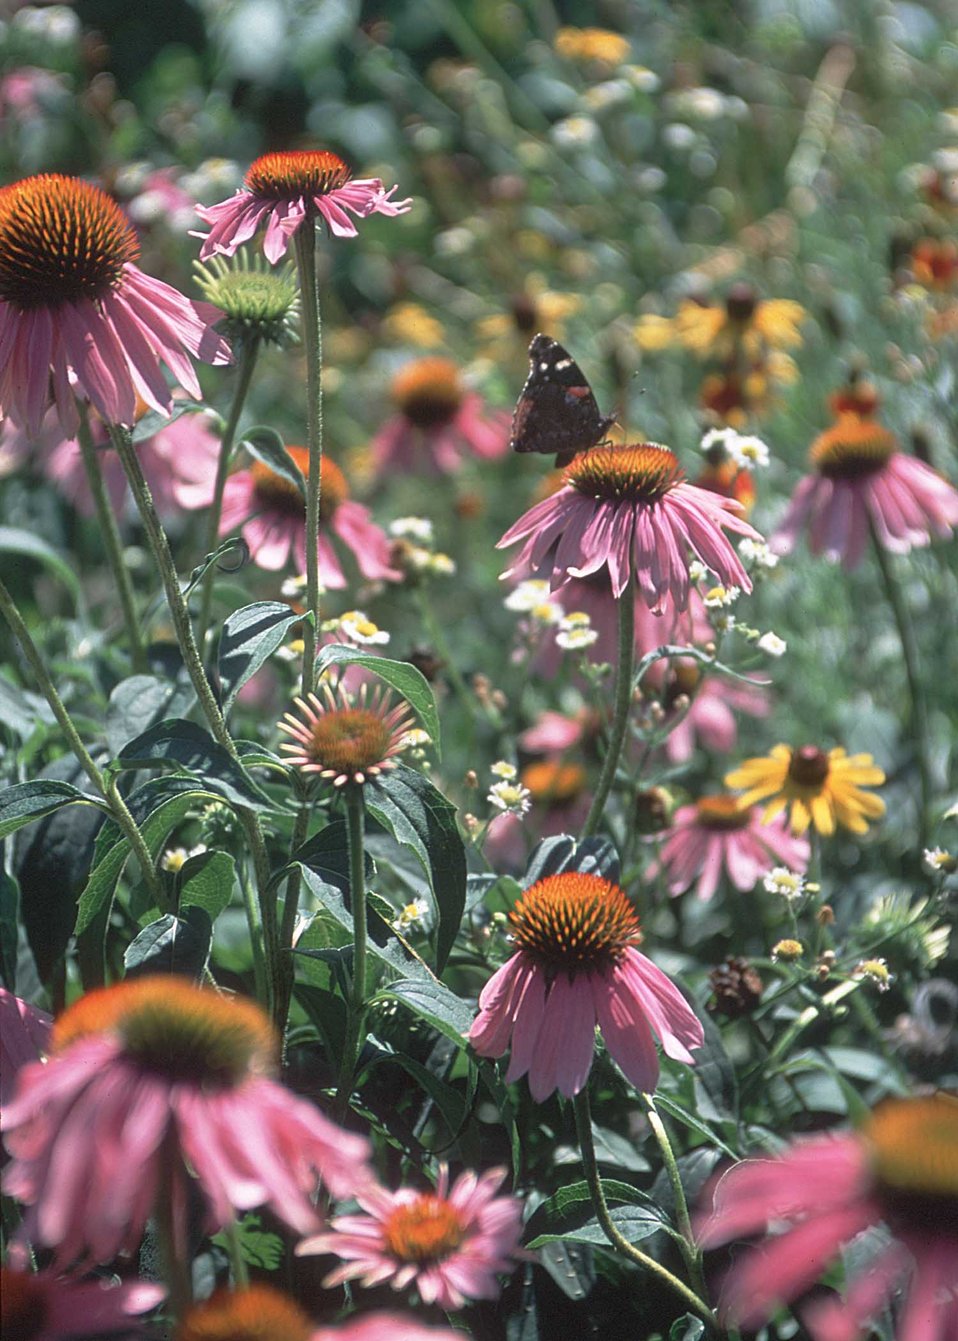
Butterfly pollinating purple coneflower in a prairie planting in a suburban back yard in Urbandale, Iowa.